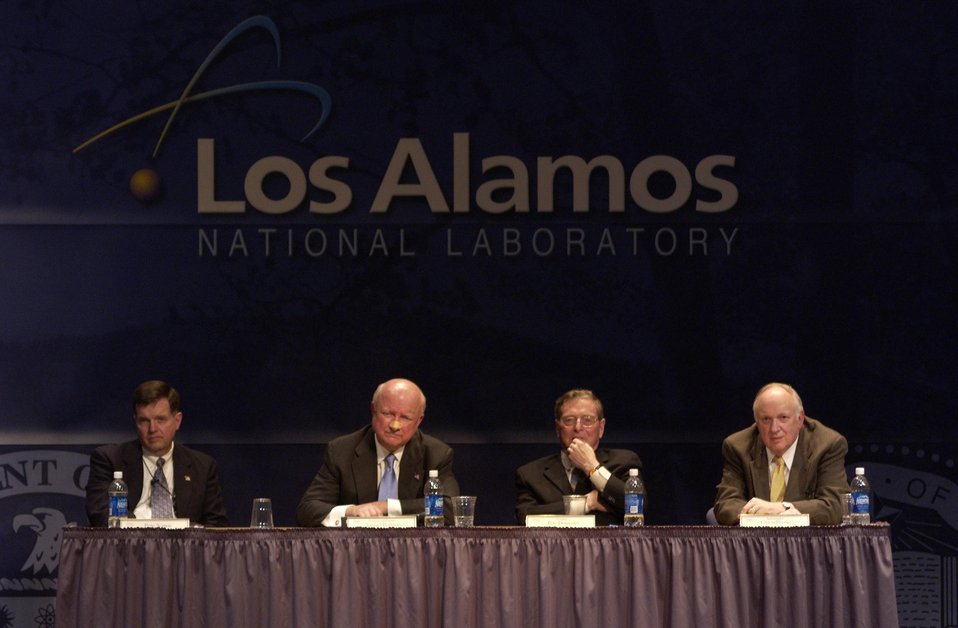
SECRETARY OF ENERGY SAMUEL BODMAN PARTICIPANTS IN A QUESTION AND ANSWER SESSION AT LOS ALAMOS NATIONAL LABORATORY.

SEATED ON THE STAGE ARE LANL DIRECTOR PETE MANOS, SECRETARY OF ENERGY SAMUEL BODMAN, NEW MEXICO SENATOR PETE DOMENICI AND LINTON BROOKS, ADMINISTRATOR OF THE NATIONAL NUCLEAR SECURITY ADMINISTRATION. ON FEBRUARY 25, 2005, THE SECRETARY ALSO TOURED THE LABORATORY, RECEIVED BRIEFINGS ON LAB PROGRAMS AND VISITED VARIOUS FACILITIES.